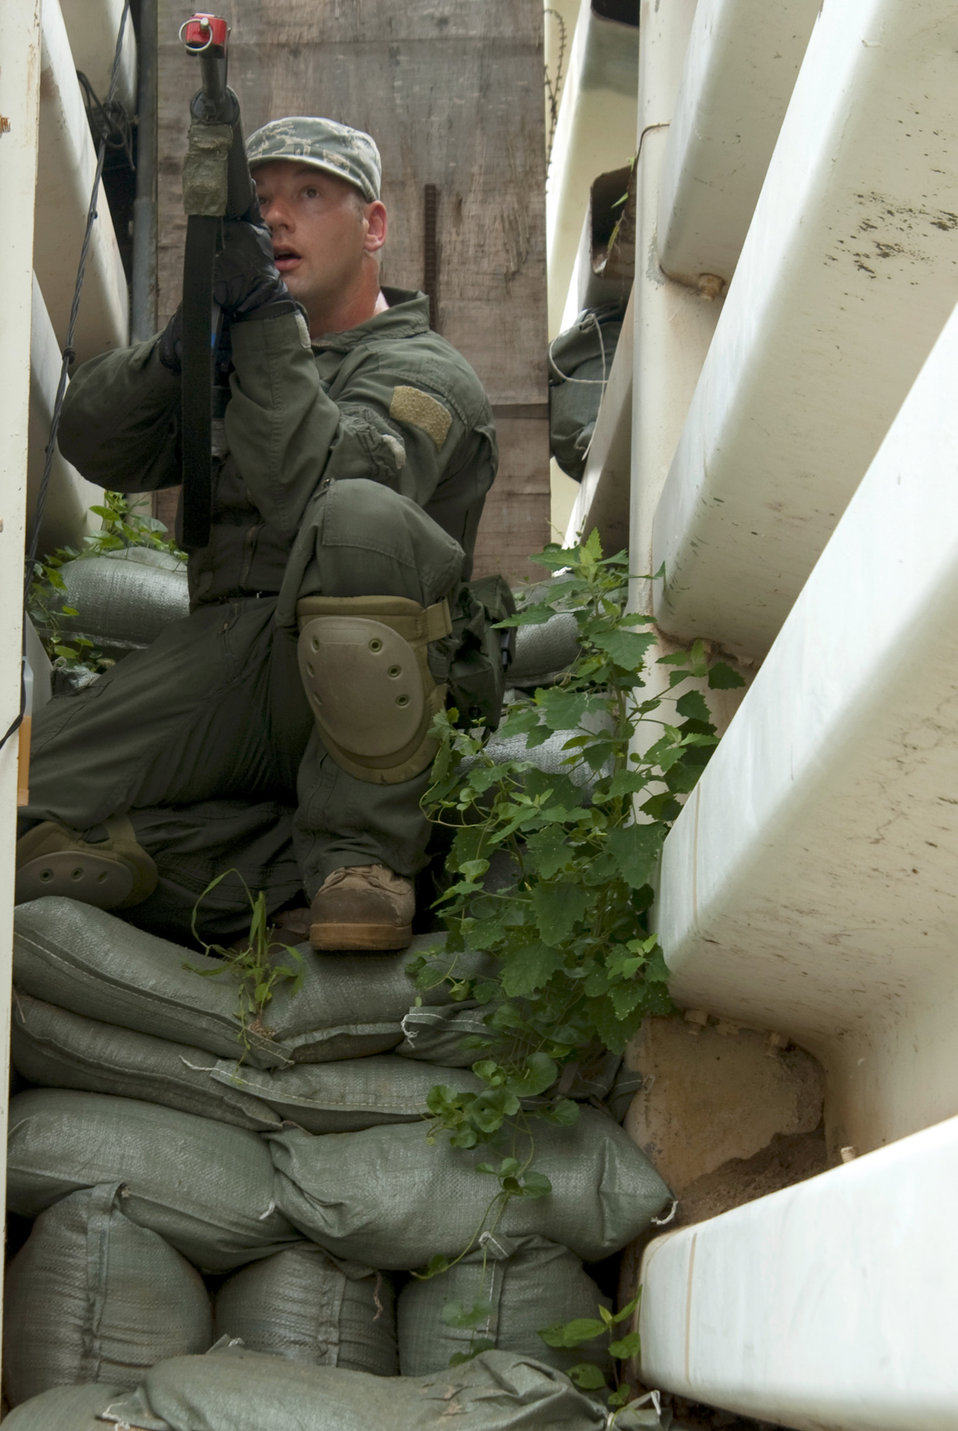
Kunsan Airmen test their skills

An